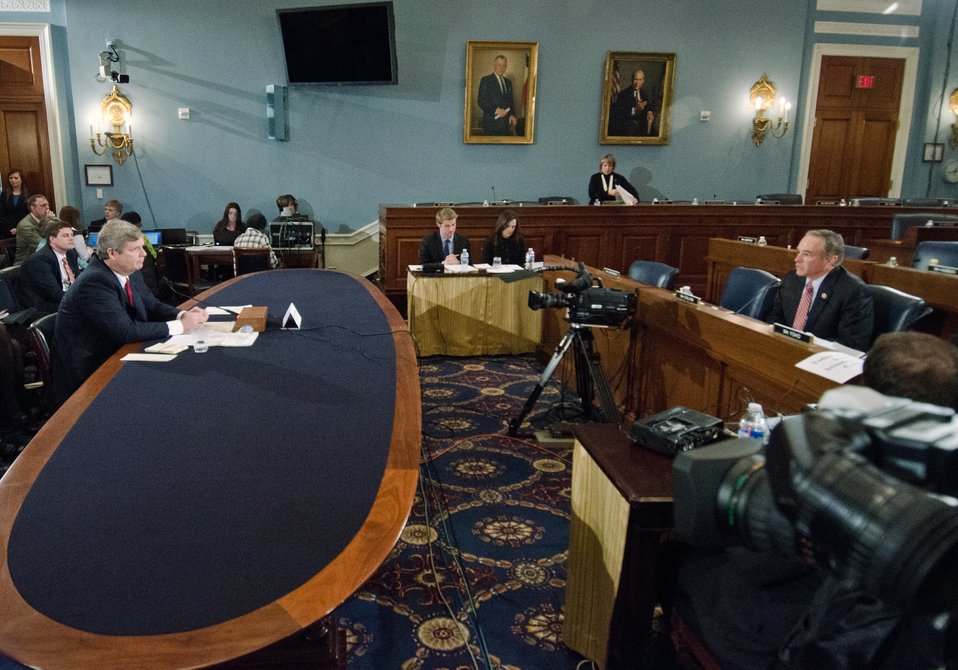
Agriculture Secretary Tom Vilsack testifies before the House Agriculture Committee regarding the “State of the Rural Economy“ at the Longworth House Office Building in Washington, D.C. on Tuesday, Mar. 5, 2013.